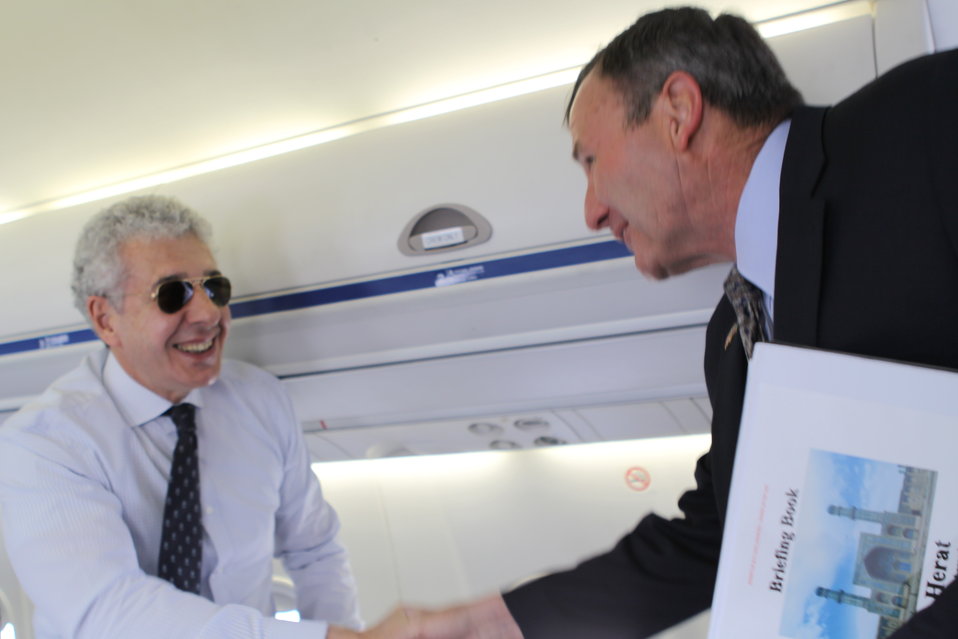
100525 Hirat Marble Conference 008